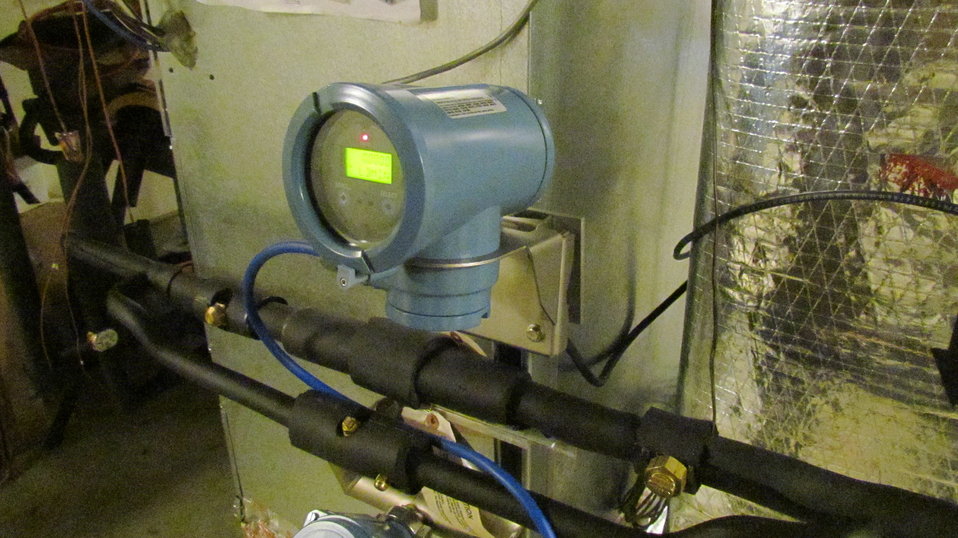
Flow meter used to measure refrigerant flow in heat pump/air-conditioning unit.